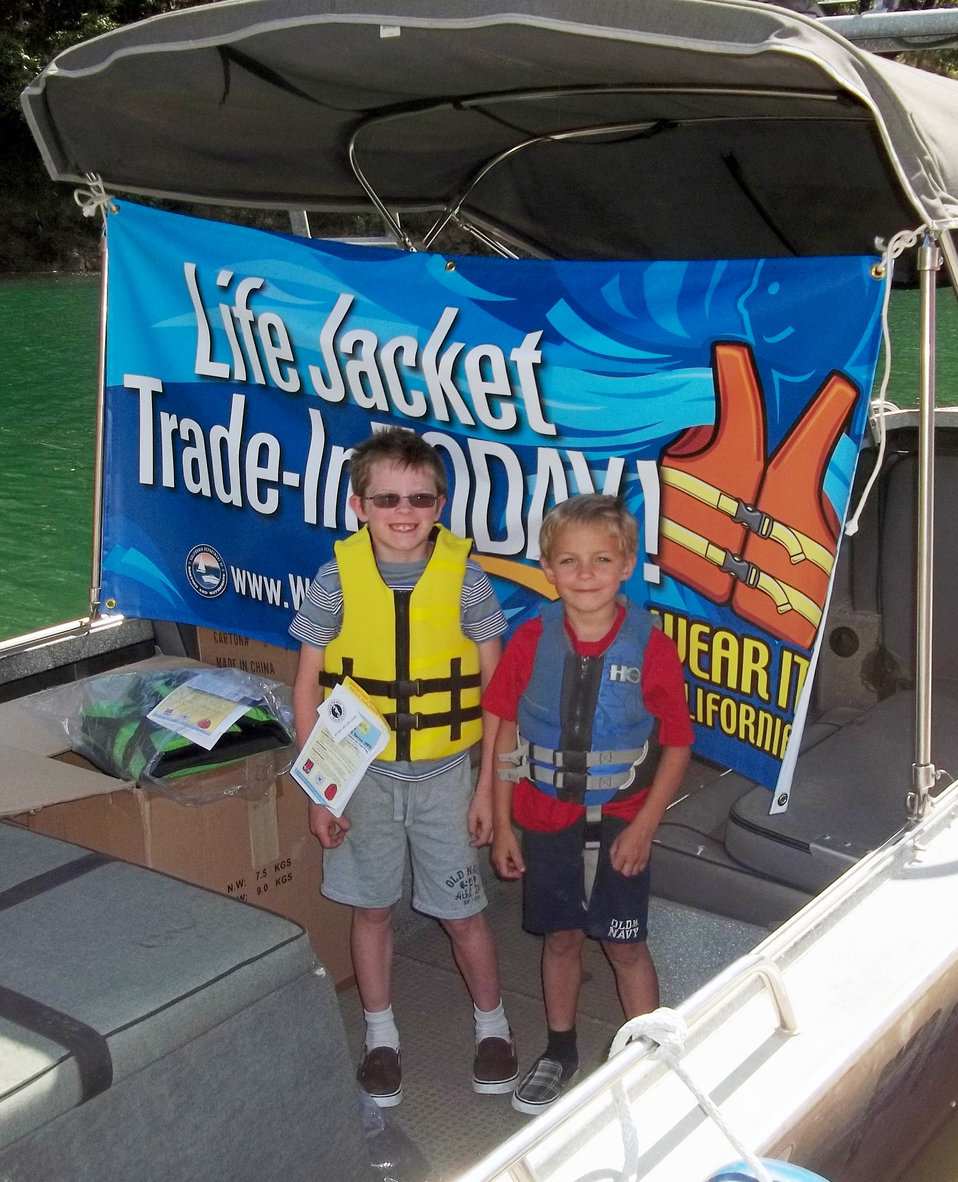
Life Jacket Trade-in Day 2013

Youngsters beam with pride, wearing their new life jackets obtained in trade for used flotation devices during Life Jacket Trade-in Day, May 24, at Englebright Lake, the U.S. Army Corps of Engineers Sacramento District park near Smartsville, Calif. The life jacket exchange was sponsored by the California Department of Boating and Waterways.